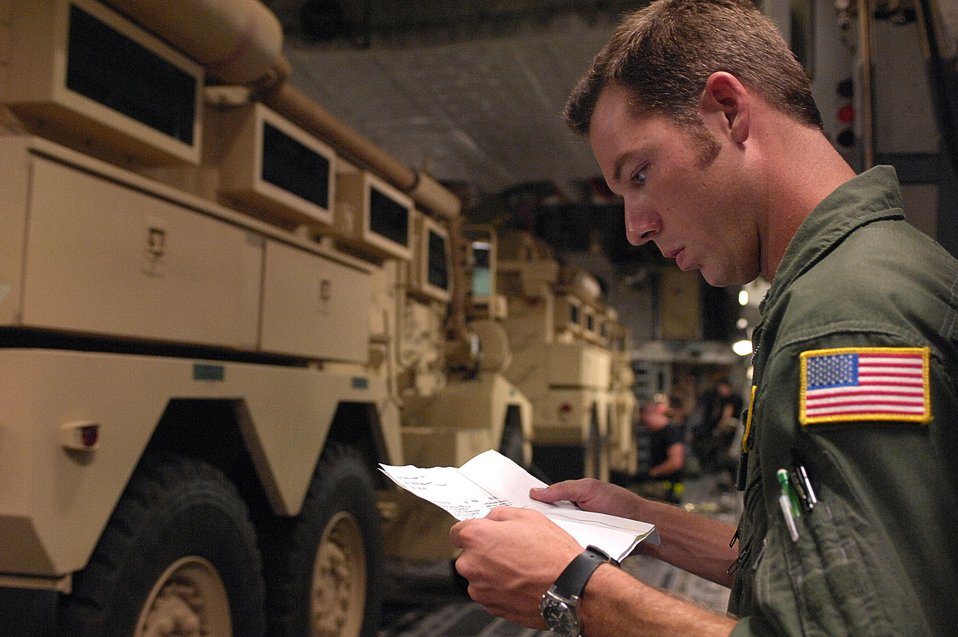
Destination: Iraq

Tech. Sgt. Brad Hughes double-checks the load information on a pair of Mine Resistant Ambush Protected armored vehicles after they are loaded on a C-17 Globemaster III at Charleston Air Force Base, S.C., for shipment to Iraq July 28. An estimated 3,500 MRAP vehicles are expected to be in Iraq by Dec. 31. Sergeant Hughes is a loadmaster with the 317th Airlift Squadron.